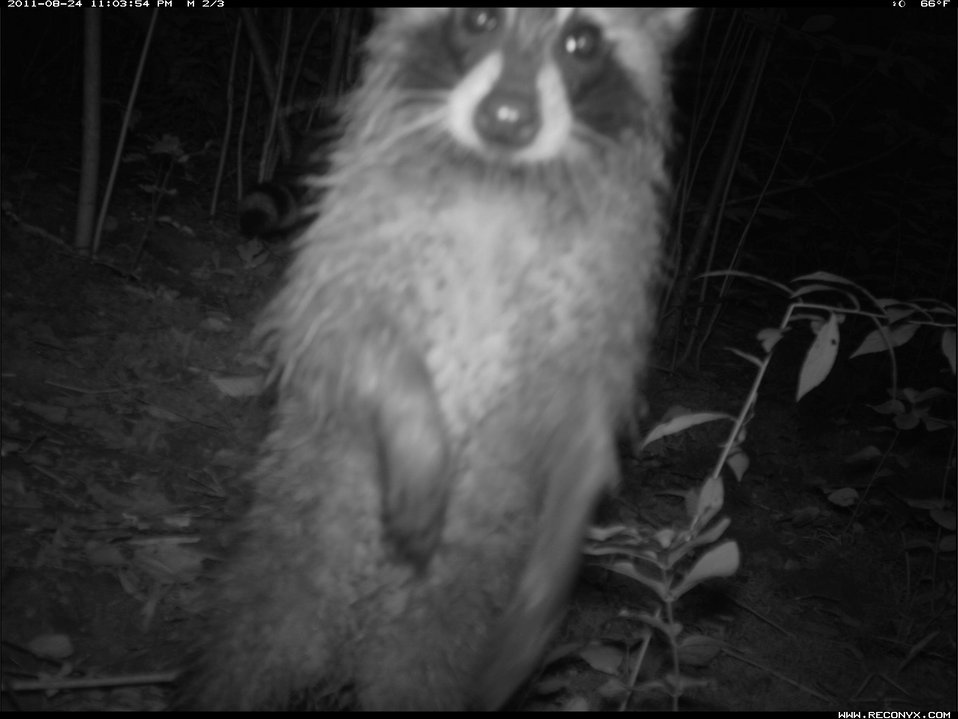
Raccoon